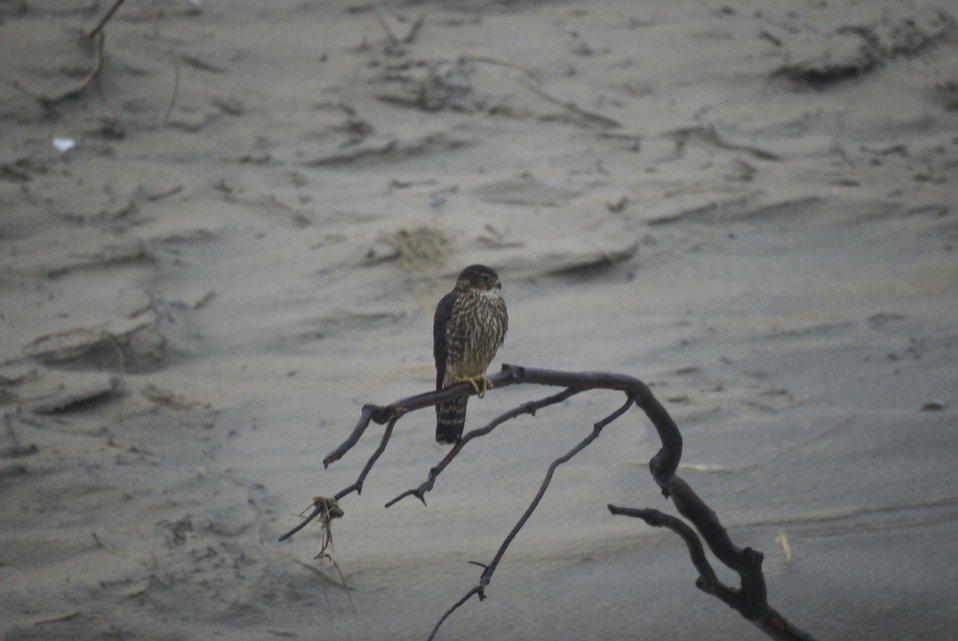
Merlin

A merlin at Back Bay National Wildlife Refuge in Virginia.